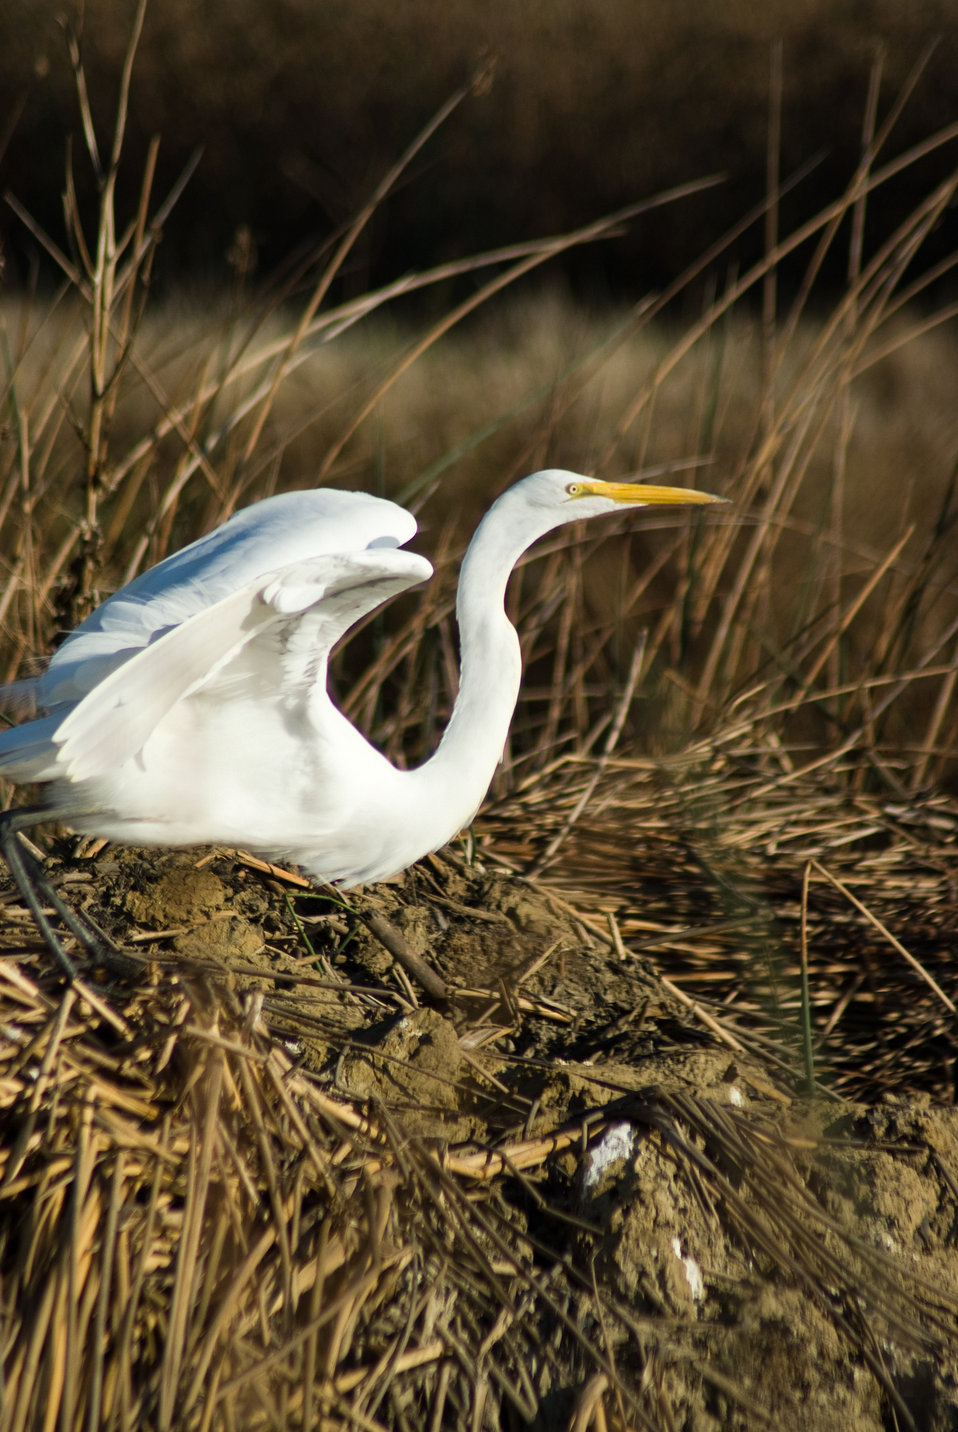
Great egret at Sacramento National Wildlife Refuge

The Sacramento National Wildlife Refuge is located near Willows, CA and is one of California's premier waterfowl refuges. Waterfowl are present from September through March. View hundreds of thousands of geese and ducks from November through January. Many other birds and mammals provide year-round viewing.